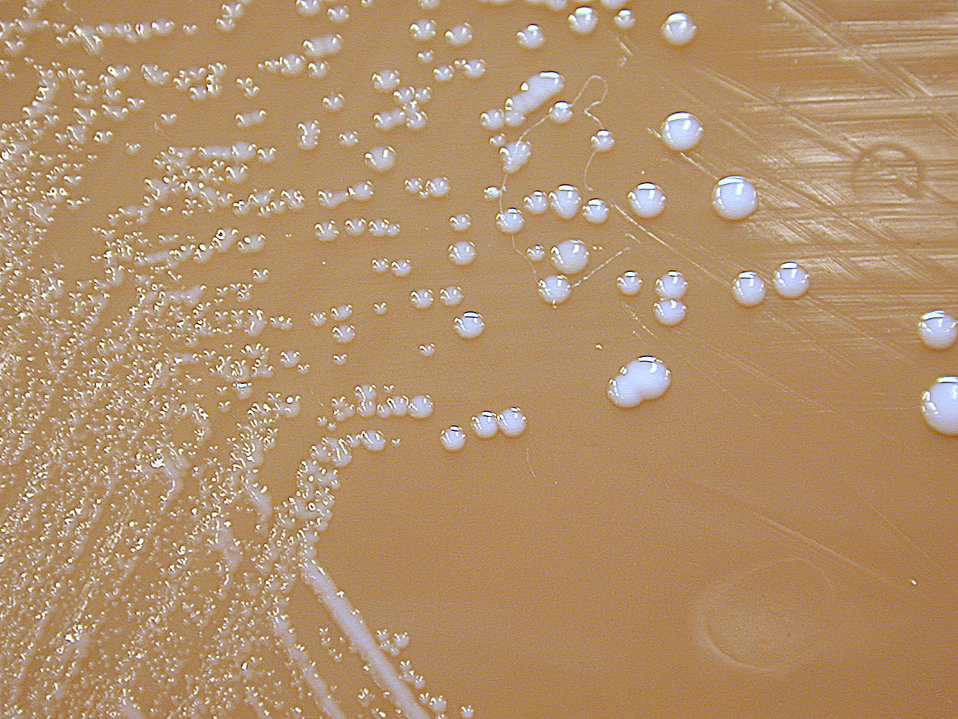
Francisella tularensis, Colonies grown on Chocolate Agar, 72 hours.